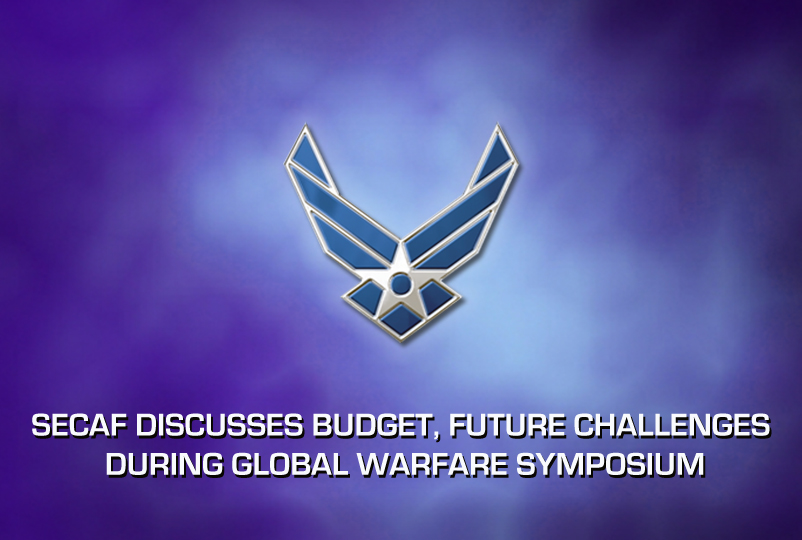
SECAF speaks during Global Warfare Symposium